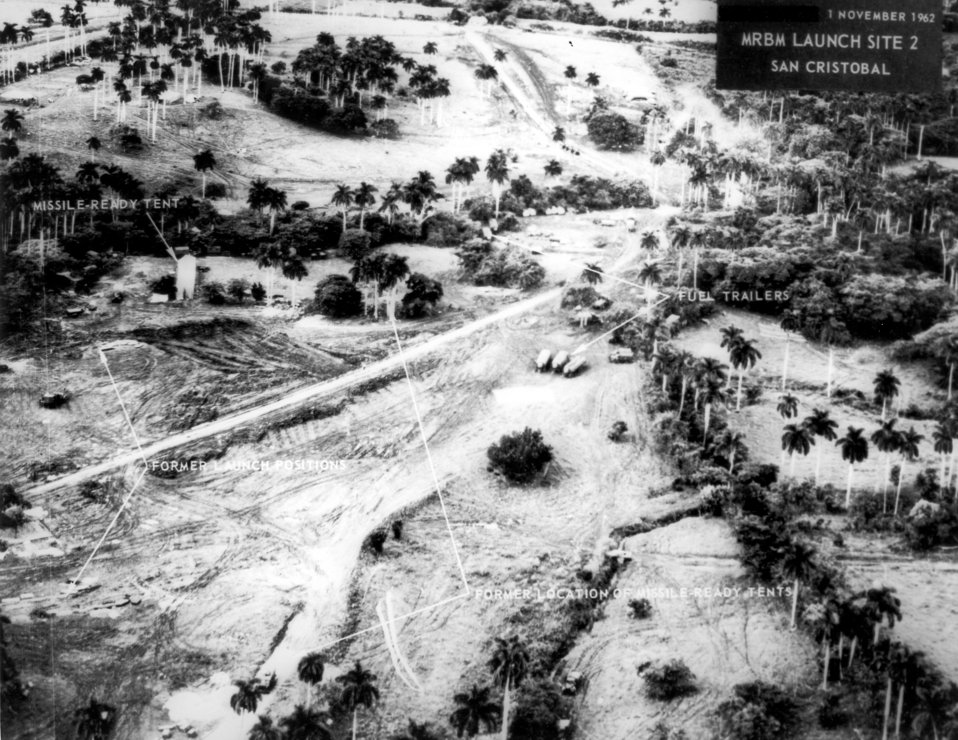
Cuban Missile Crisis

1960's -- Cuba- an aerial view of the San Cristobal medium range ballastic missle launch site number two. November 1, 1962